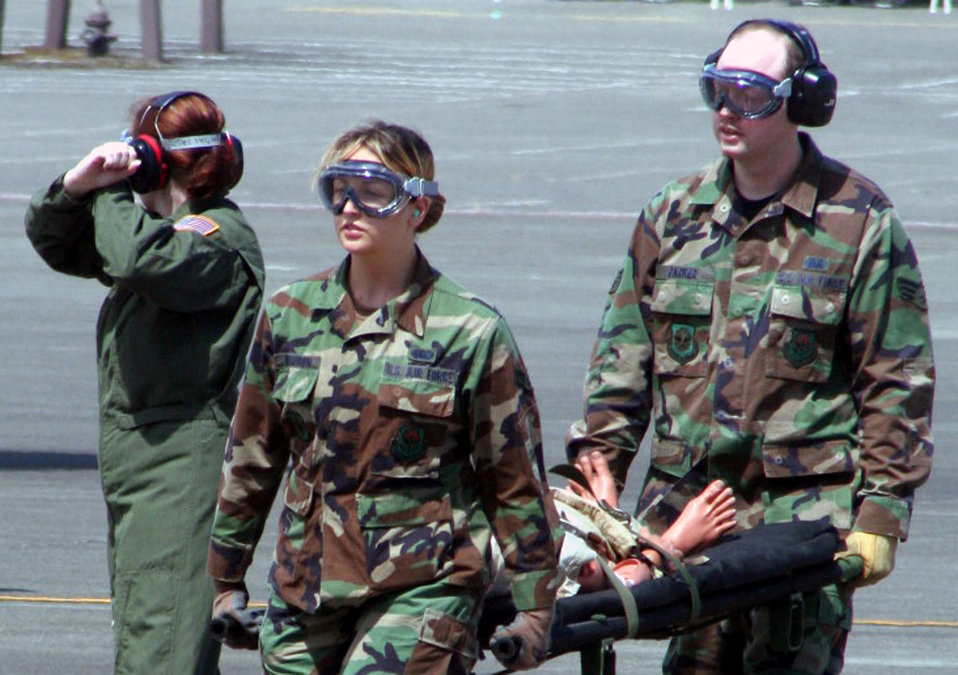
Air Mobility RODEO 2009

Teams competing in the aeromedical evacuation events for Air Mobility Rodeo 2009 wait in line as the competition commences July 20 at McChord Air Force Base, Wash. More than 100 teams are participating in Rodeo competition, including teams from seven foreign countries. Rodeo is the Air Force's and AMC's premier air mobility competition. It's an international combat skills and flying operations competition designed to develop and improve techniques, procedures and interoperability with international partners to optimize mobility partnerships and enhance mobility operations.